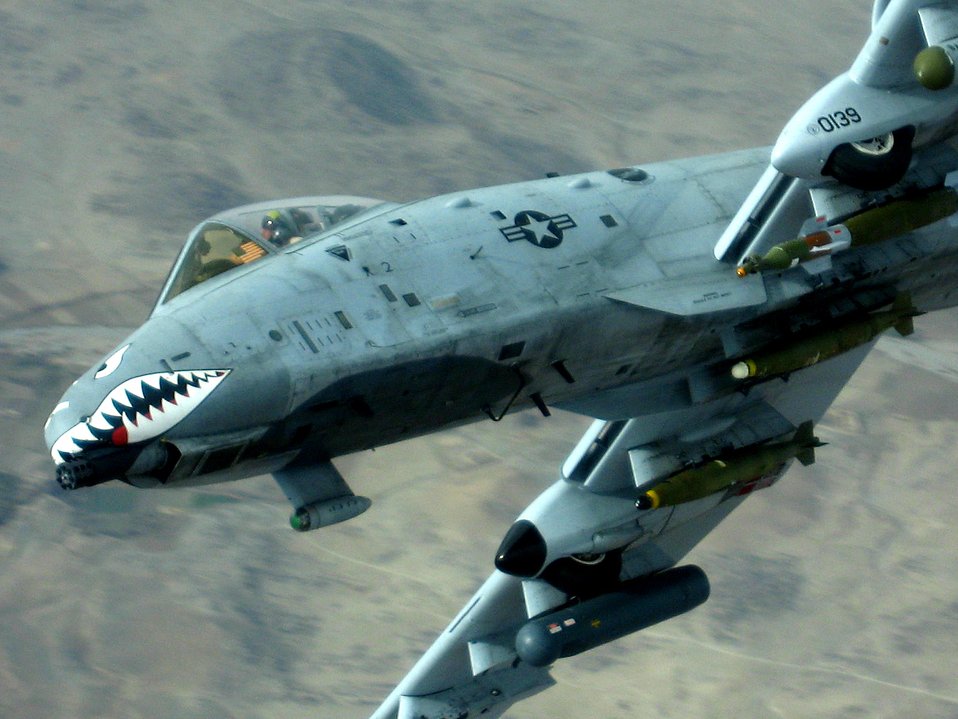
Gas and go

A-10 Thunderbolt IIs, similar to this one flying over Afghanistan, play a critical role daily in providing close-air support to ground forces in contact with Taliban extremists as part of Operation Enduring Freedom.